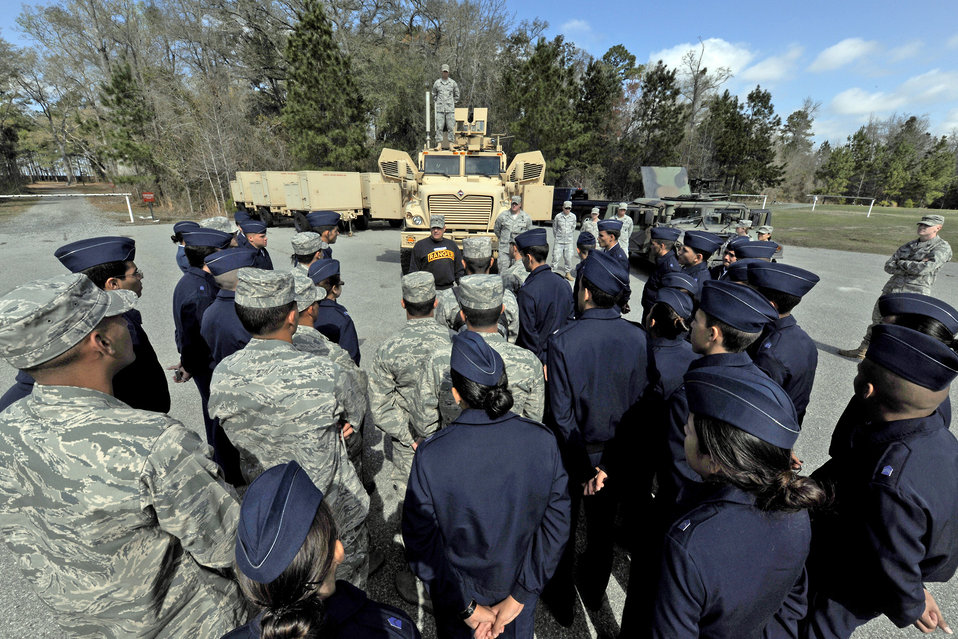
Cadets get a taste of Moody's mission, active-duty life

Col. Donald Derry speaks to cadets from the University of Puerto Rico Air Force ROTC Detachment 755 during a base visit March 23, 2010, at Moody Air Force Base, Ga. Colonel Derry is the 820th Security Forces Group commander.